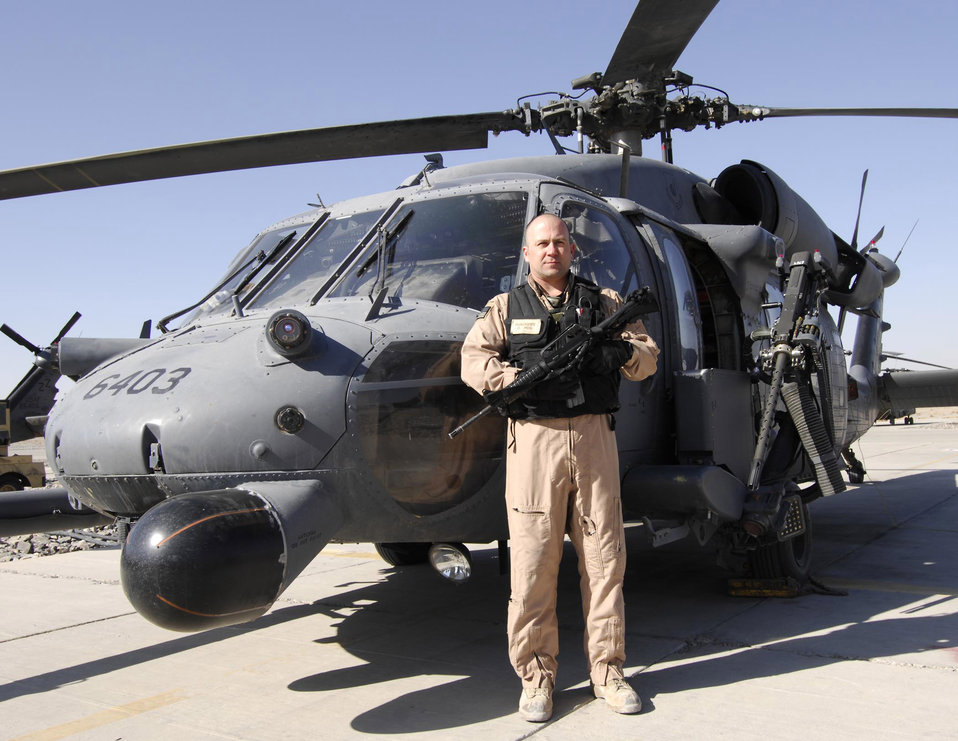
Airmen keep

Tech. Sgt. Stephen Thackery stands by one of tthe 33rd Expedtionary Rescue Squadron's HH-60 Pave Hawk helicopters at Dandahar Airfield, Afghanistan, Dec. 29. Since February, 2006, HH-60s, like those assigned to the 33rd ERQS, have been flying alongside Army helicopters to help provide medical evauation throughout Afghanistan. Sergeant Thackery is a medic with the 33rd ERQS.